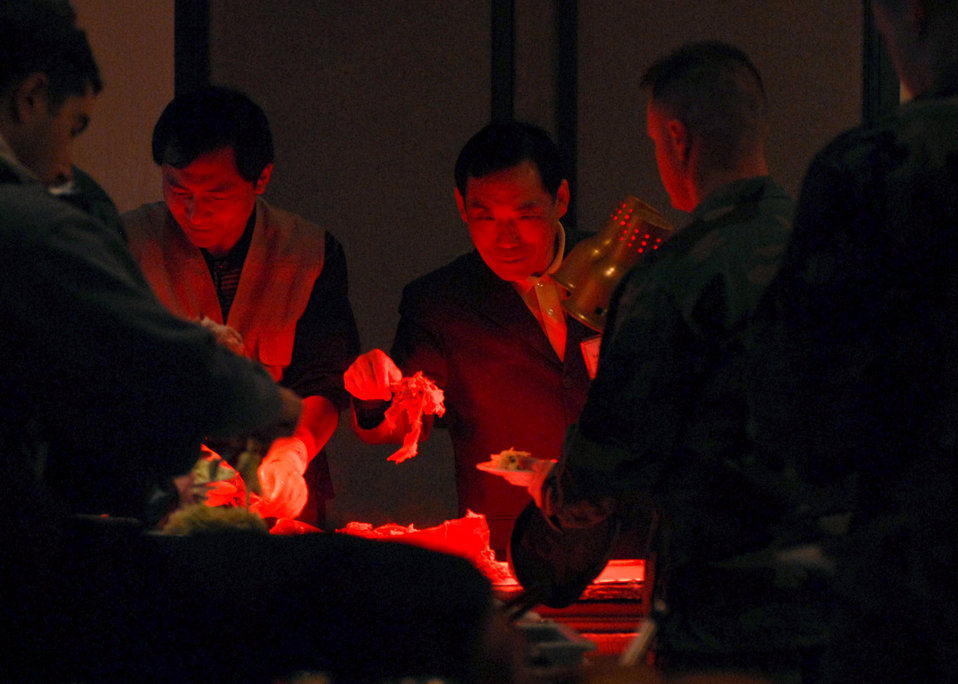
Honorary commanders program in full swing at Kunsan

Honorary commanders serve roasted pig to 8th Fighter Wing Airmen here Nov. 12. More than 60 honorary commanders held a friendship day for approximately 400 Wolf Pack Airmen to increase relationships between the base and local community.